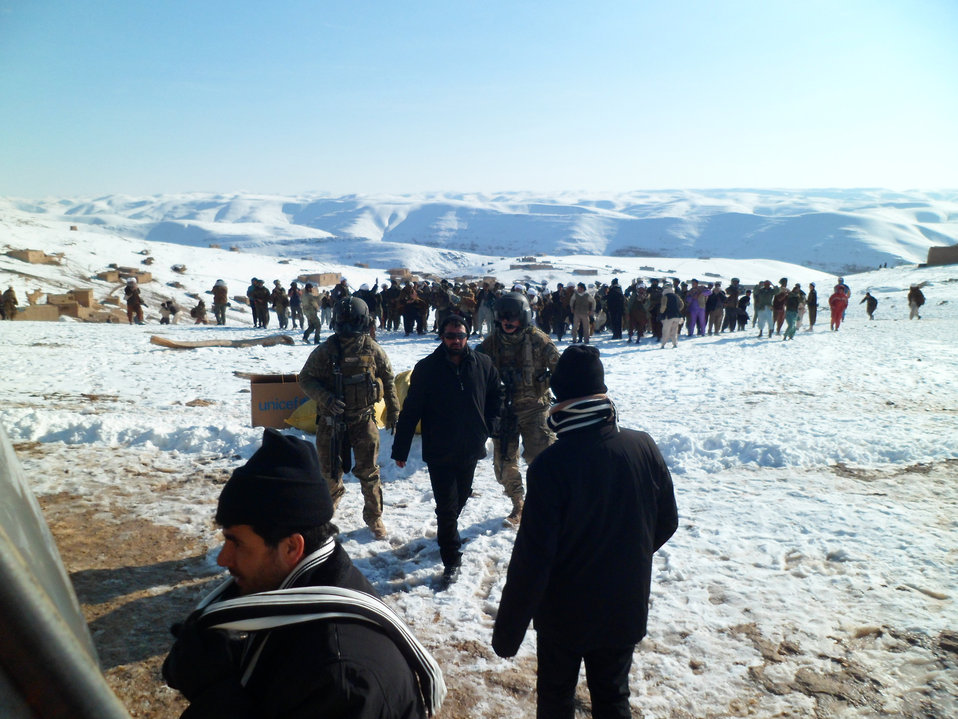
Air Force advisers, Afghan aircrew drop medical supplies to rural villages

Advisers from the 738th Air Expeditionary Advisory Group assist in a drop of humanitarian supplies Jan. 27, 2012, at a remote village in Afghanistan. The villagers of Sarji and Gaw Hoshtah were struck by a measles epidemic, which claimed the lives of 12 children.